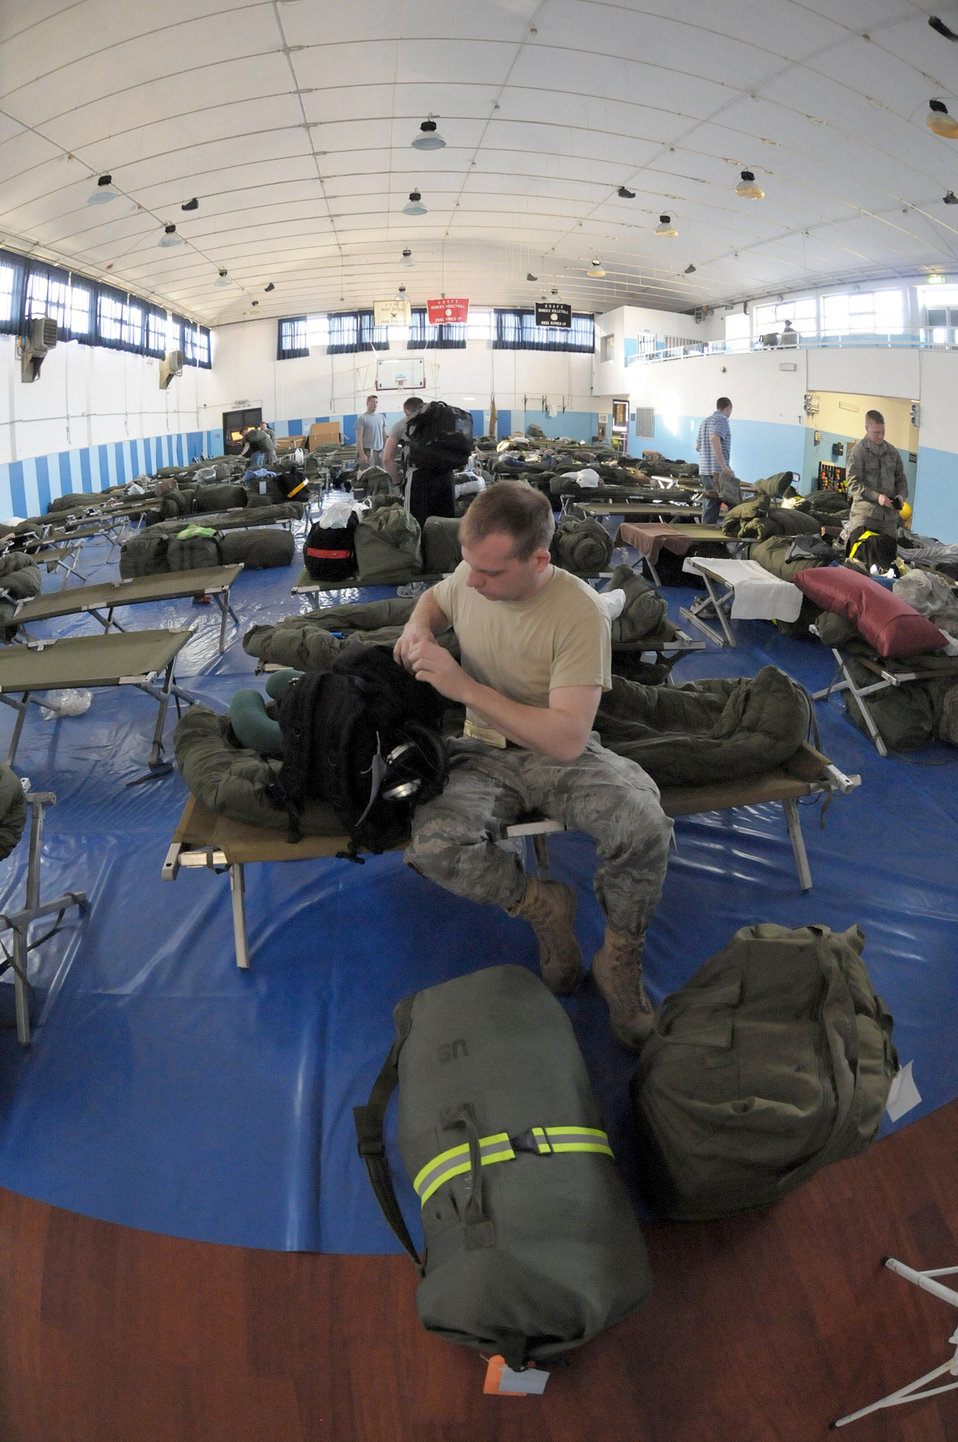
Airmen deploy to Aviano

Deployed Airmen prepare for work March 22, 2011, while residing in temporary quarters at Aviano Air Force Base, Italy.